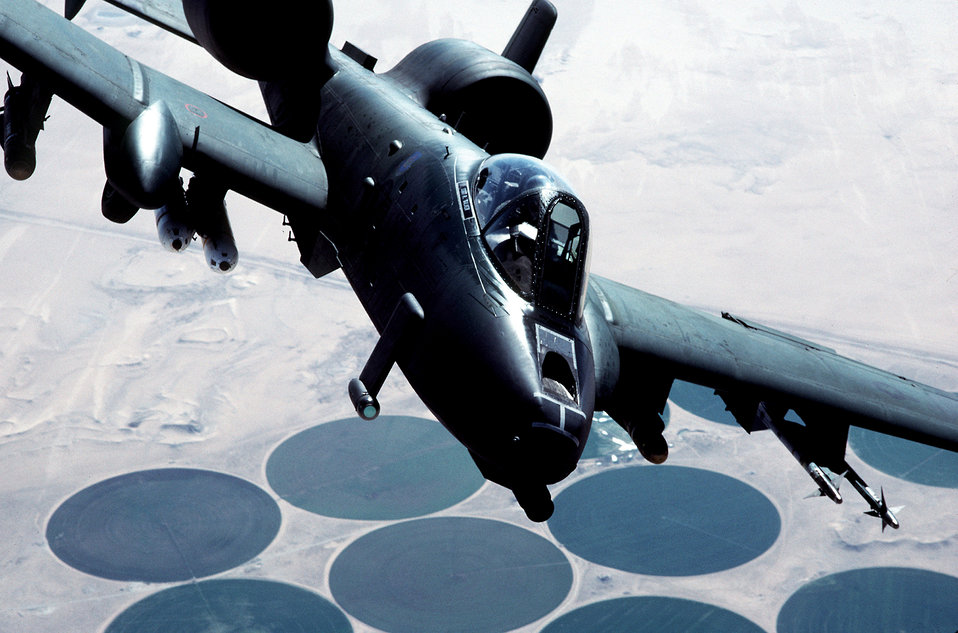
A-10A Thunderbolt II

An A-10A Thunderbolt II aircraft flies over a target area during Operation Desert Storm. It was designed specially for the close-air-support mission and has the ability to combine large military loads, long loiter and wide combat radius, which proved to be vital assets to the United States and its allies during Operation Desert Storm and Operation Noble Anvil.